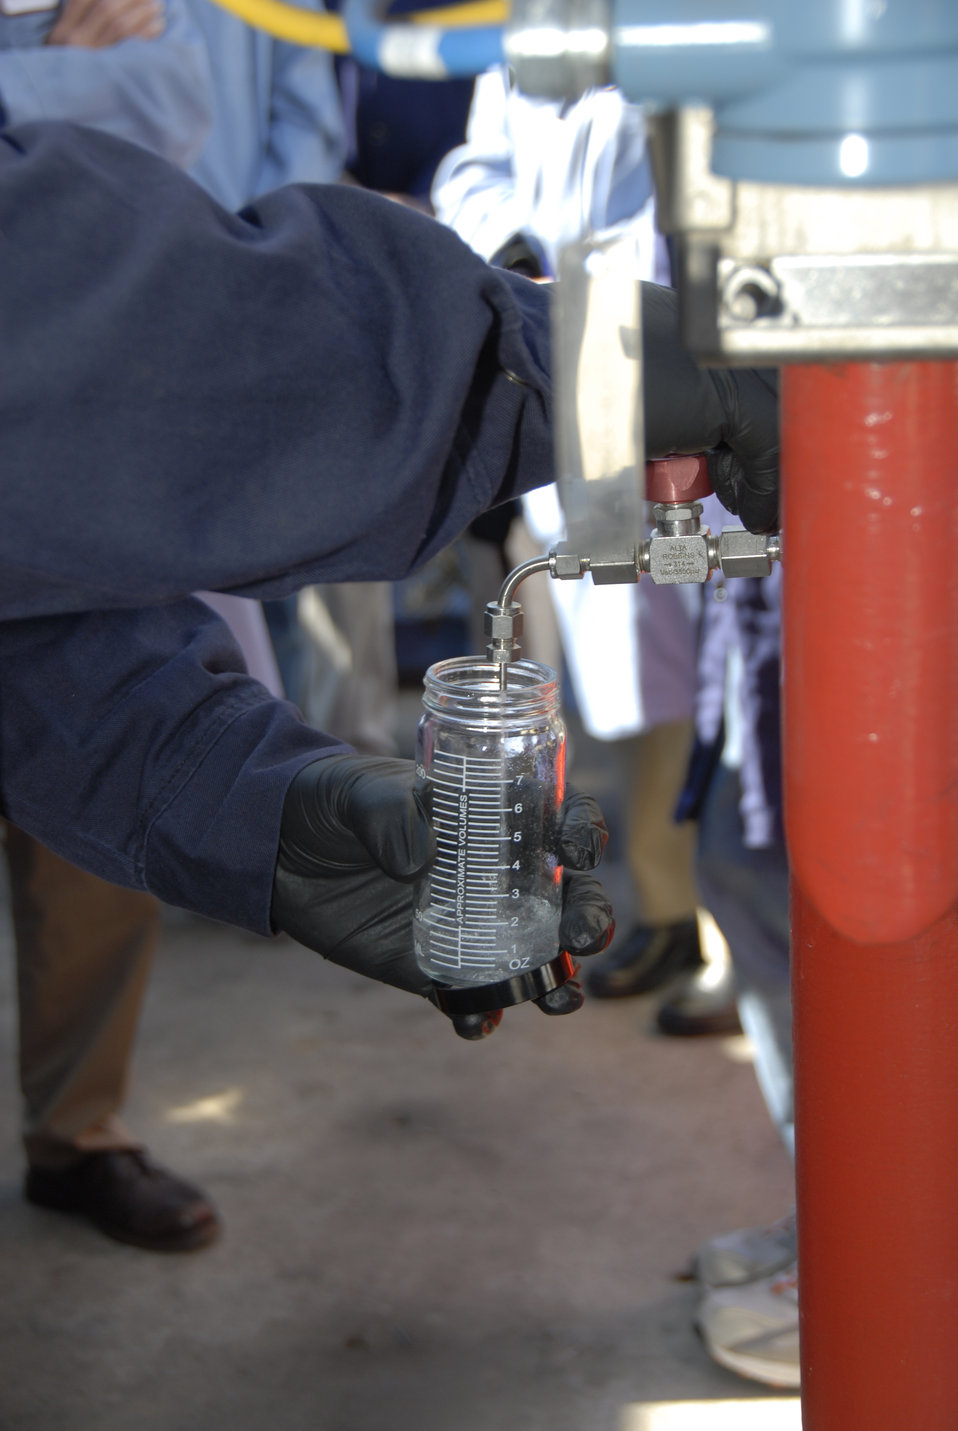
Wood chips are used as a source for cellulosic ethanol production at Range Fuels in Broomfield, Colorado on October 23, 2008. Cellulosic ethanol is a biofuel produced from wood, grasses, or the non-edible parts of plants. Wood chips and other cellulosic materials have several advantages in that they are abundant, they don't compete with food crops such as corn or soybean, and they result in far lower carbon-dioxide emissions.